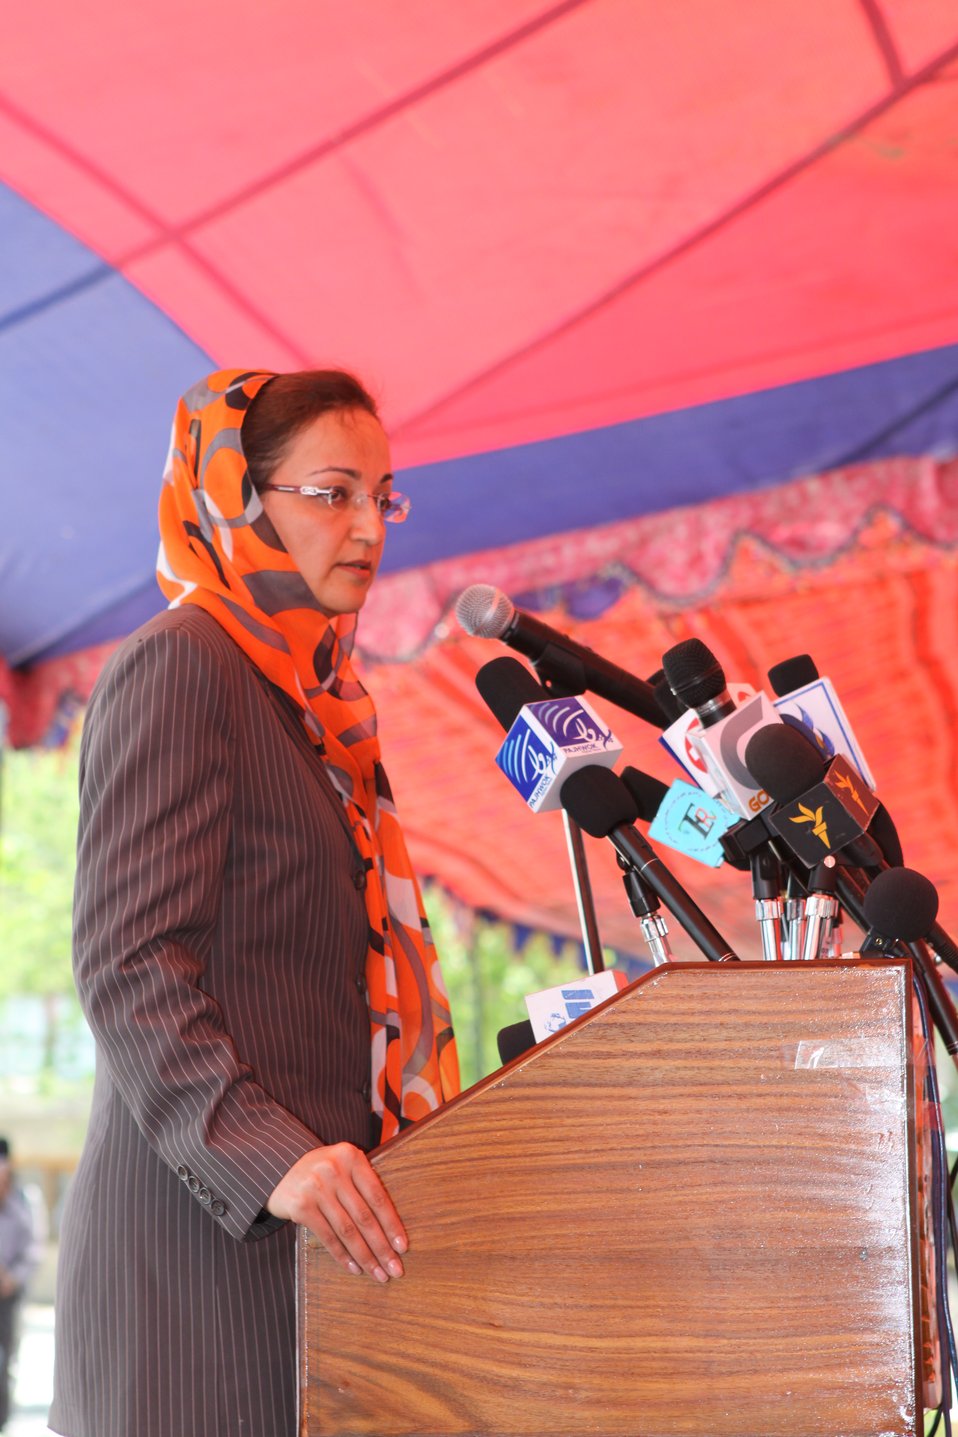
100522 ATVI Graduation 093